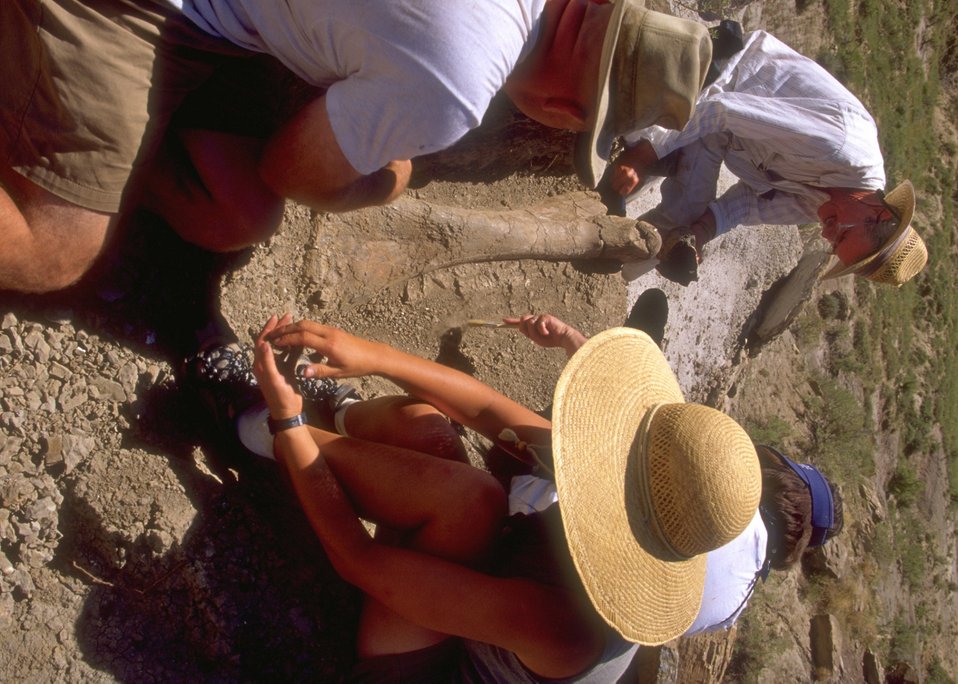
Paleontologist working a dig for dinosaur bones, Lance Creek Fossil Area, Newcastle Field Office.